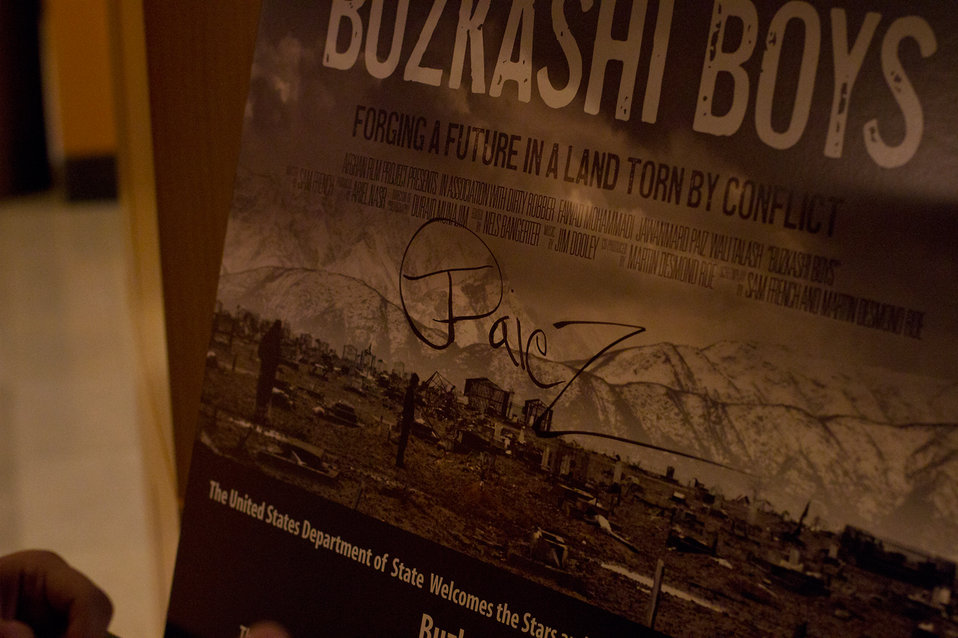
The Stars and Producer of Buzkashi Boys Visit the State Department

The stars and producer of the Oscar-nominated film Buzkashi Boys visit the U.S. Department of State in Washington, D.C., for a screening and Q and A on February 28, 2013.